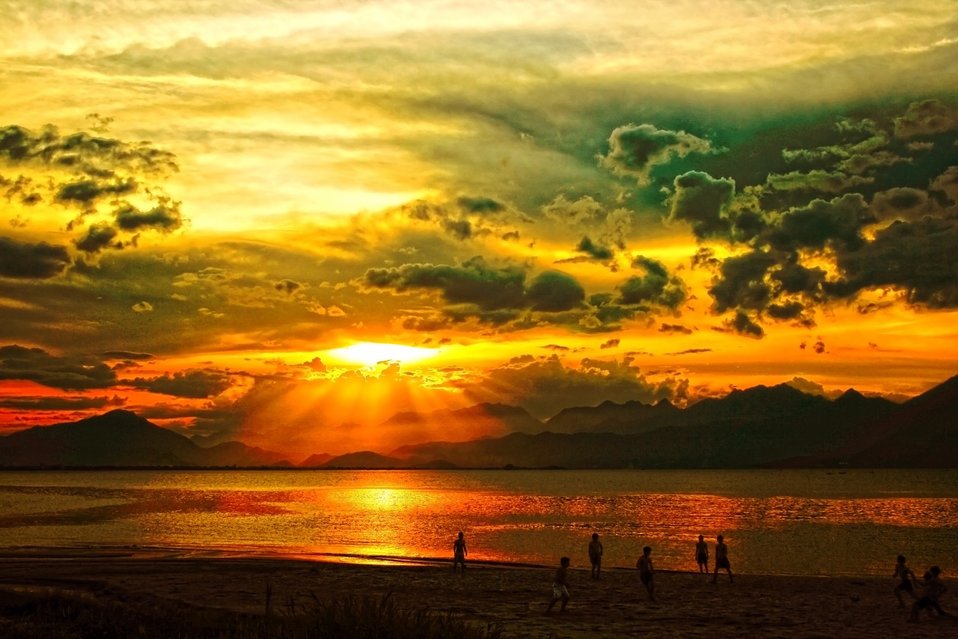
Sunset #5

Sunset over the danang bay, central viet nam..